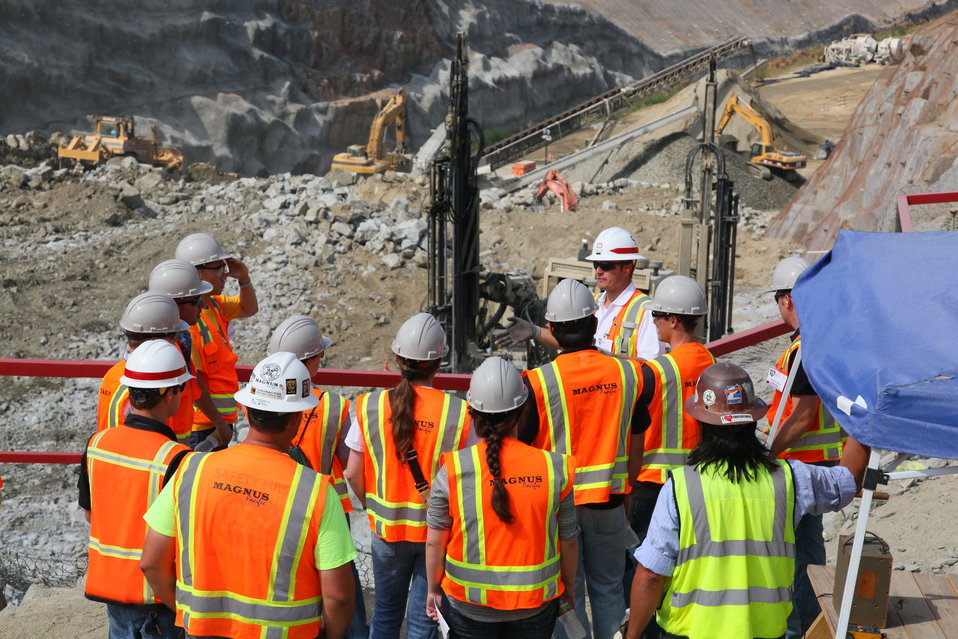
Construction and engineering students visit the Folsom spillway job site

Civil engineer Steve Soldati (fourth from right), with the U. S. Army Corps of Engineers Sacramento District, explains the methods for excavation to visiting college students at the Folsom Dam spillway construction site Sept. 10. The briefing was part of the American Society of Civil Engineers Construction Institute’s “Student Days 2011” event. College students from northern California were given the opportunity to network with industry, receive guided tours of the Folsom Dam spillway construction site, and briefings on the workings of engineering and construction efforts that go into a successful project.